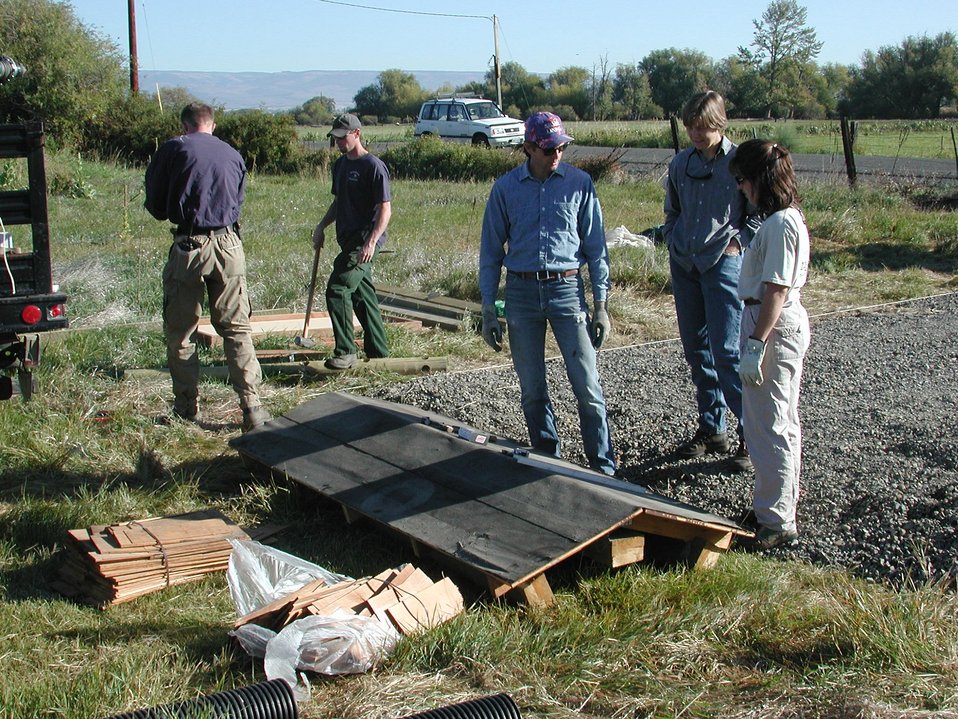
Wenatchee Field Office's Nationa Public Lands Day where volunteers built a wooden fence, installed vehicle barriers, and consturcted an information kiosk.